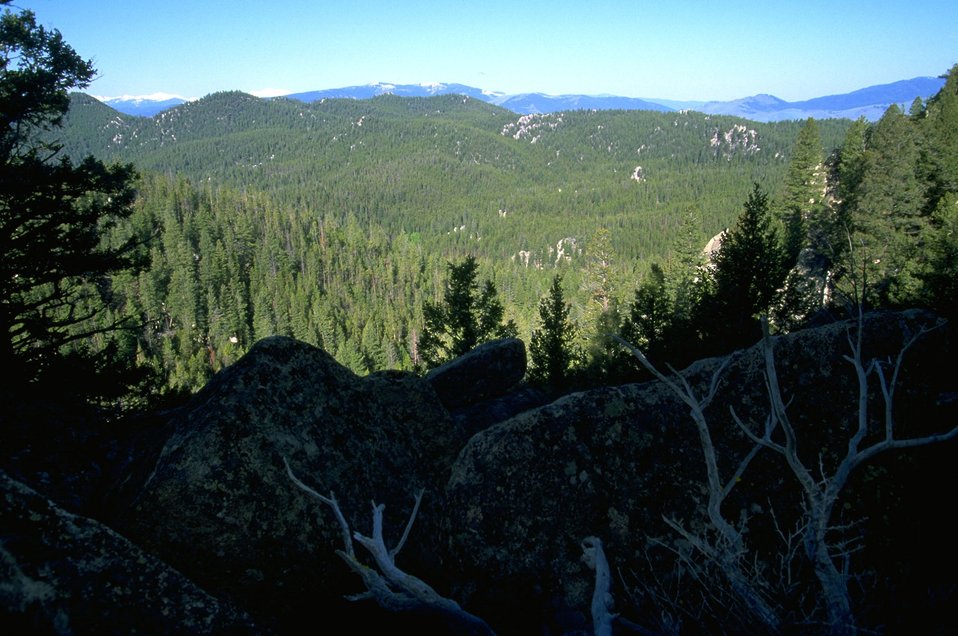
Humbug Spires Wilderness Study Area